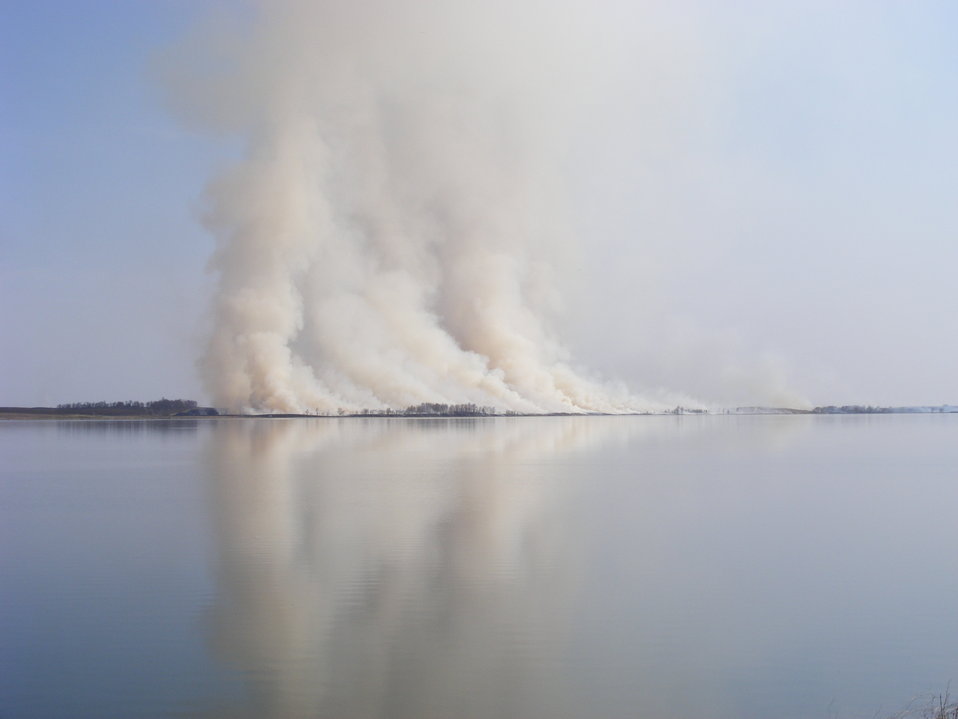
Where There's Smoke...

A towering column of smoke is reflected on Waubay Lake at Waubay National Wildlife Refuge during a prescribed burn. Prescribed burns like this are used to rejuvenate native prairie grasses and forbs and reduce invasive tree growth.